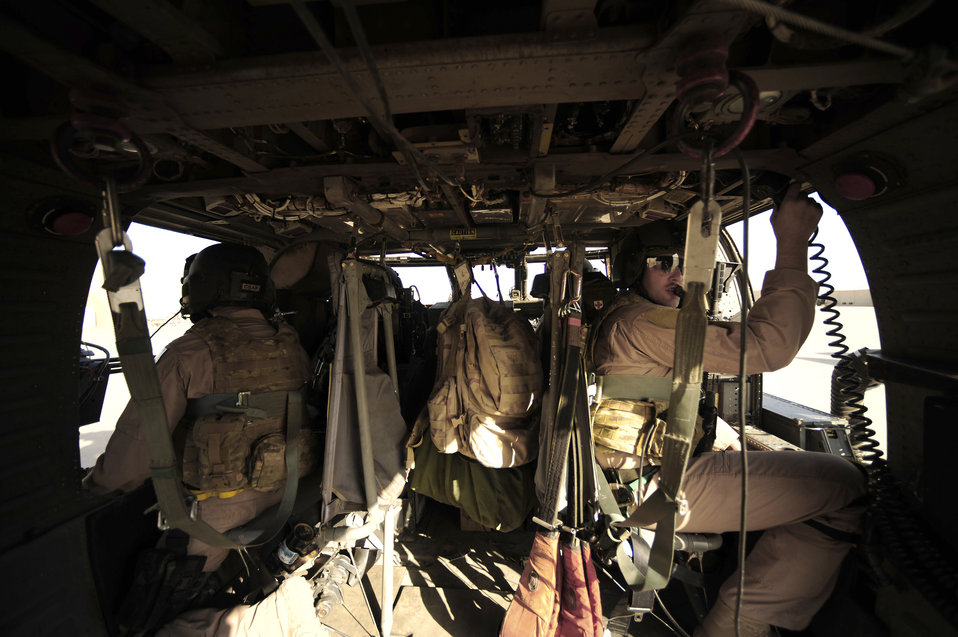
Pave Hawk mission over Iraq

Staff Sgt. Andrew Pena (left) and Staff Sgt. Aaron Walton look out their windows, scanning as aerial gunners during a mission July 12, 2010, at Joint Base Balad, Iraq. Both sergeants are assigned to the 64th Expeditionary Rescue Squadron.